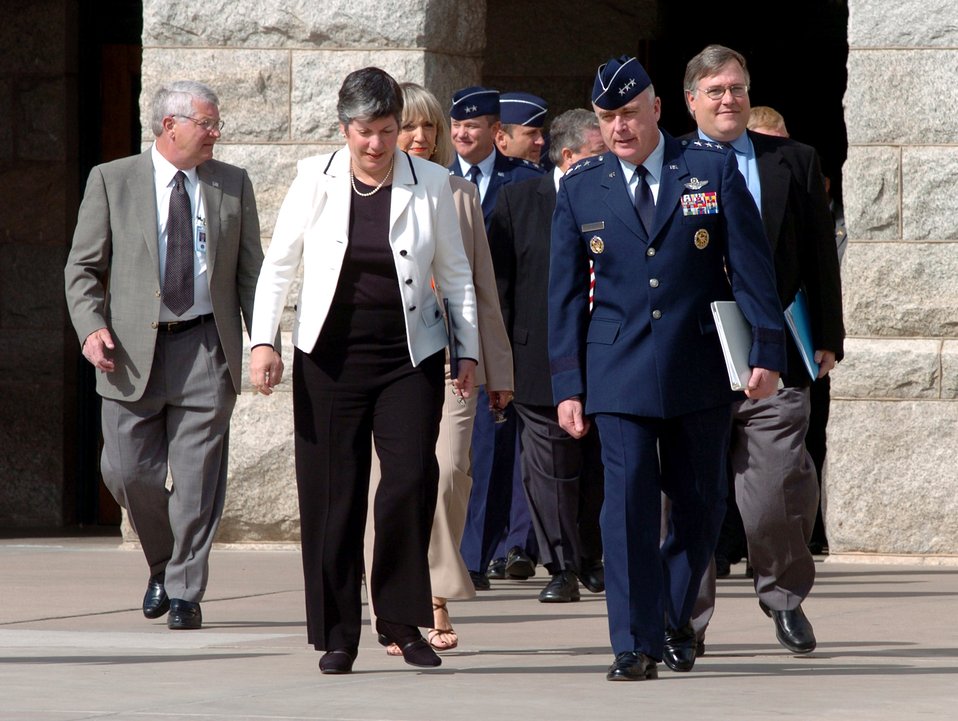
Air Force Week kicks off in Phoenix

Arizona Gov. Janet Napolitano and Lt. Gen. Carrol H. Chandler walk out of the Arizona state capital in Phoenix before the proclamation ceremony declaring the week of March 19-25 Air Force Week here. Several bus loads of Airmen from nearby Luke Air Force Base joined Arizona state officials and Air Force senior leaders to help kick off the event.